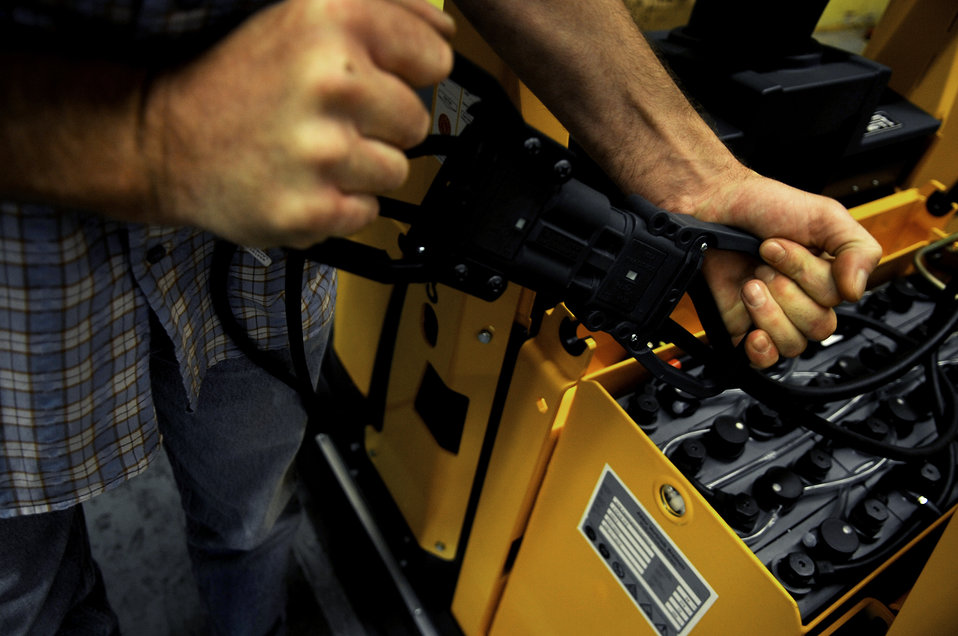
AGV

A member of the 86th Logistics Readiness Squadron material management flight charges an automated guided vehicle June 17, 2010, at Ramstein Air Base, Germany. Members of the 86th LRS material management flight are the first to use these AGVs in the United States Air Forces in Europe Command.